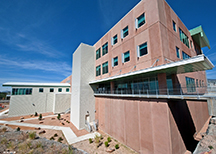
Los Alamos National Laboratory's newest facility, the Radiological Laboratory Utility Office Building (RLUOB), is the first to achieve both the leadership in Energy and Environmental Design (LEED) status and LEED gold certification from U.S. Green Building Council (USGBC).